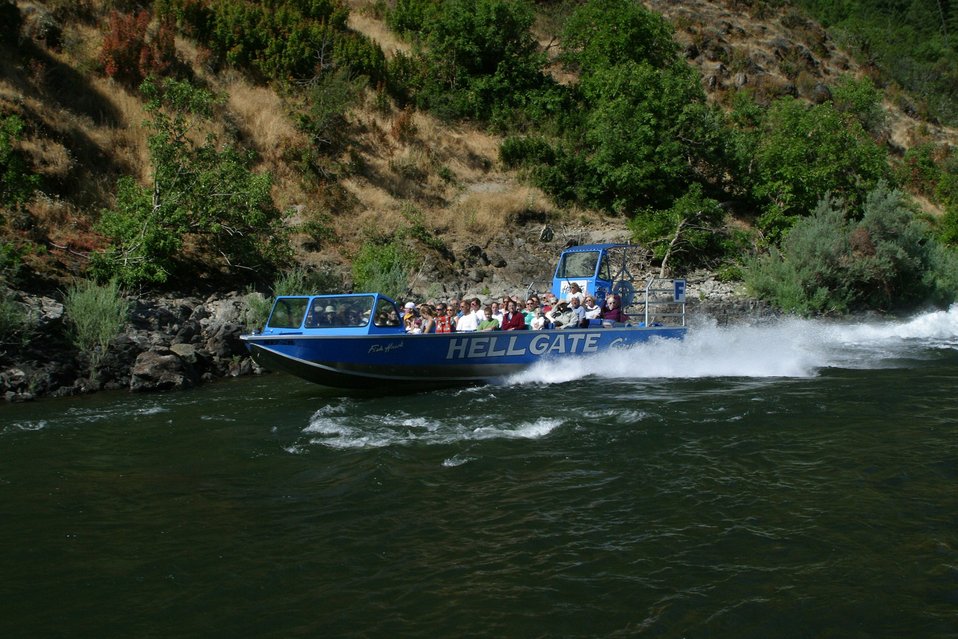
A jet boat leaving Hellgate canyon near Hog Creek.